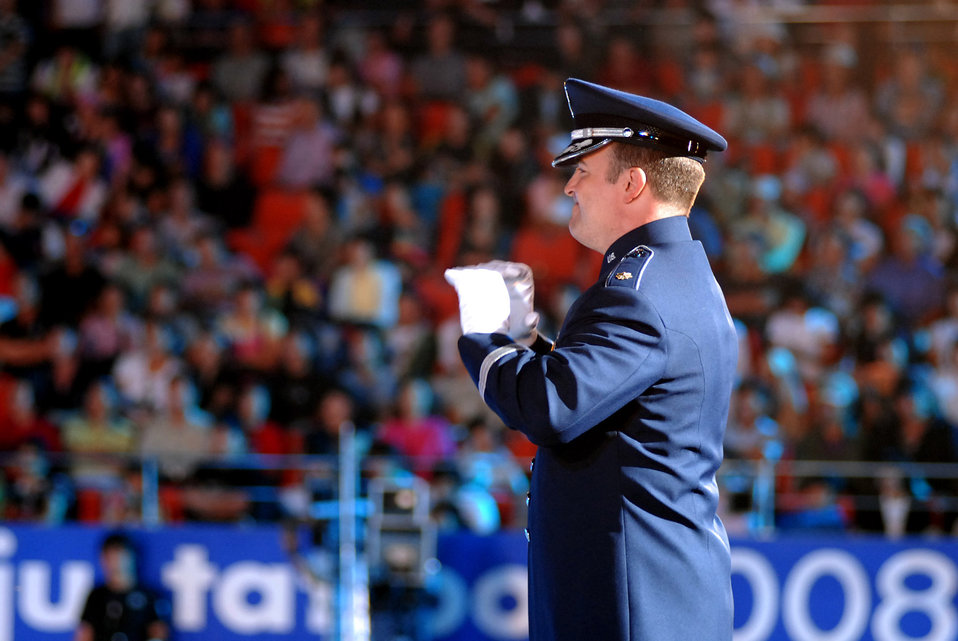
International tattoo drums up excitement

Maj. Matthew Henry directs the Air Force Total Force Band during the 2008 International Tattoo Sept. 5 in Wonju, South Korea. The band was formed with regional band members from commands worldwide. Major Henry is the Pacific Air Forces Regional band commander.